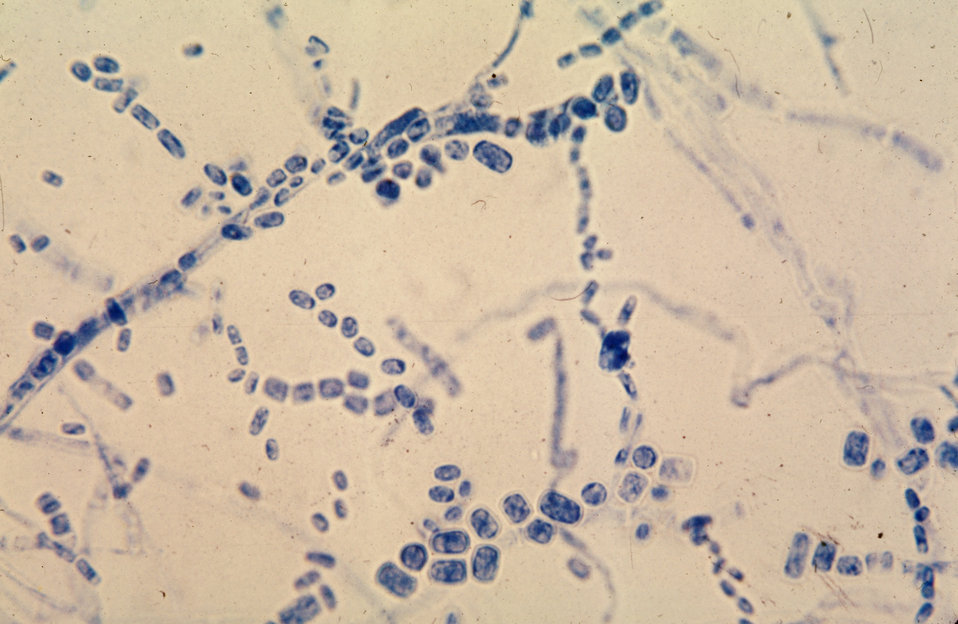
This is a photomicrograph of a Geotrichum sp. fungus, magnified 475X.